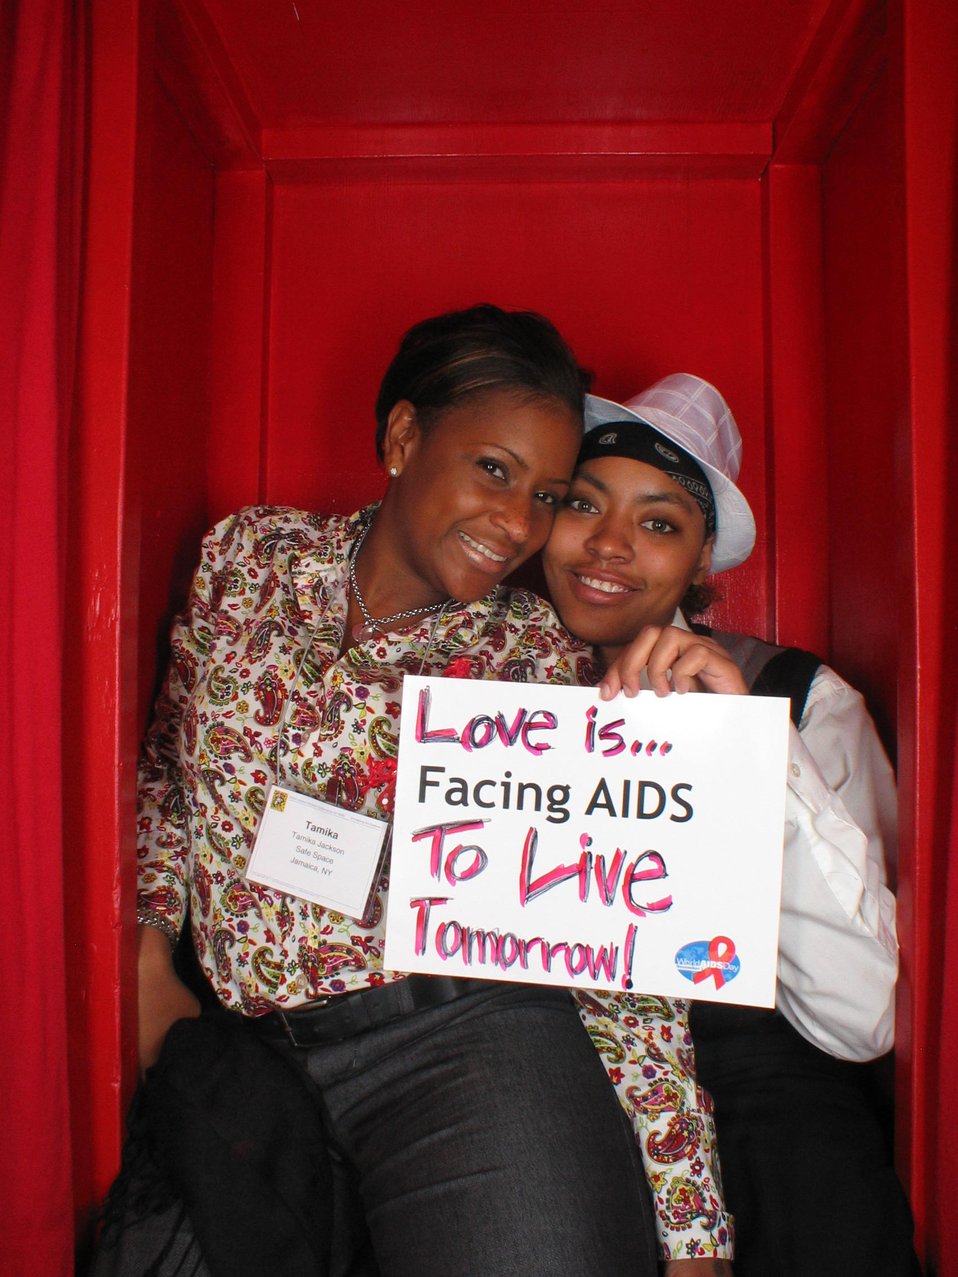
Love is Facing AIDS to live tomorrow!